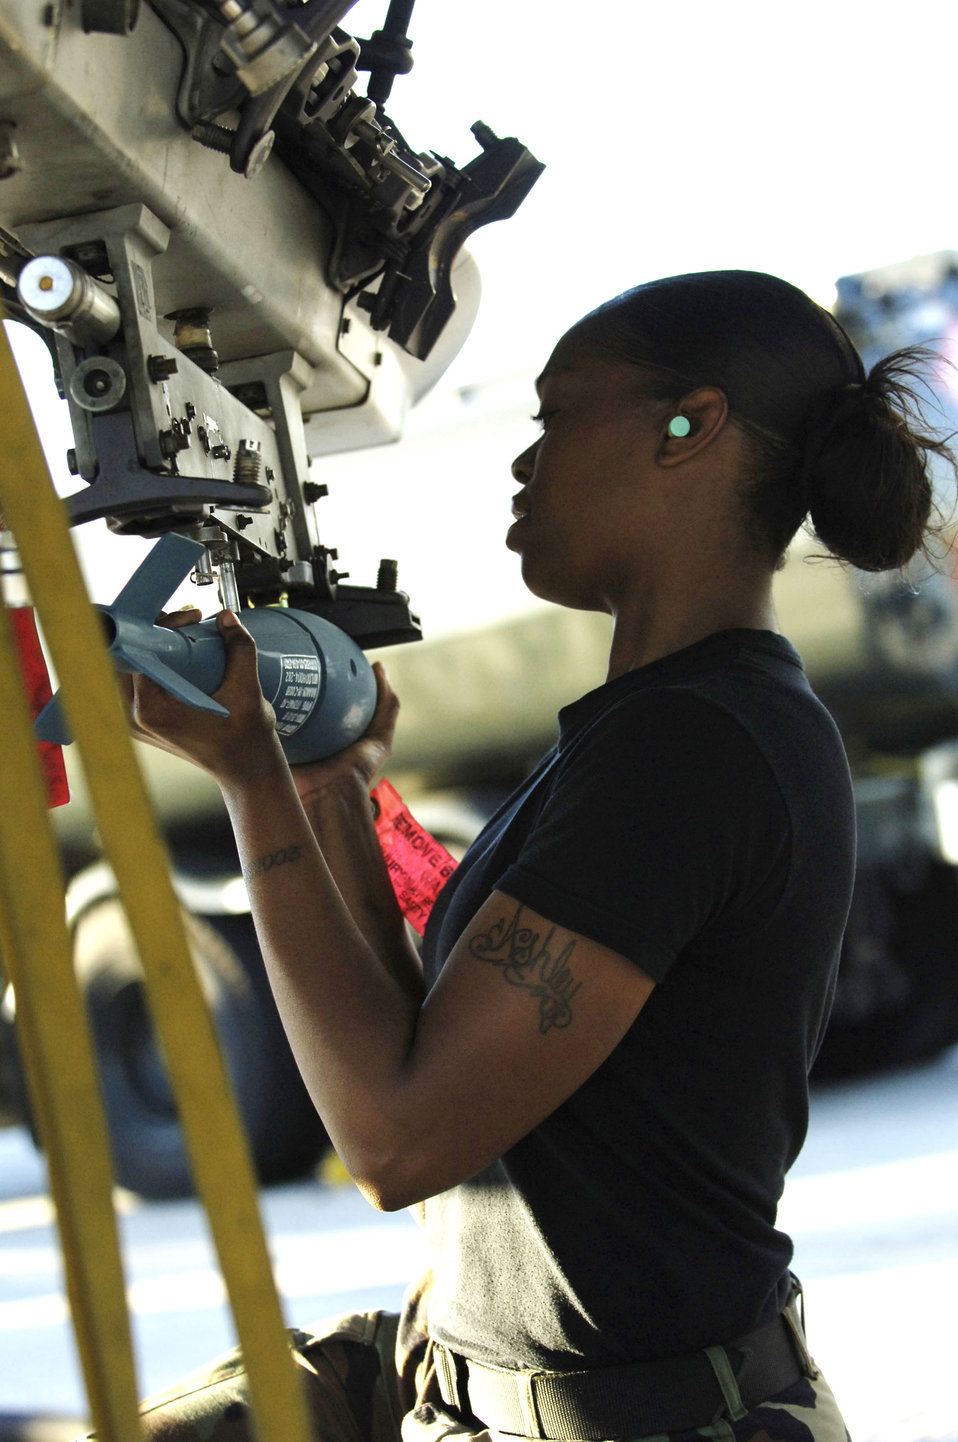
Close-air-support exercise tests Atlantic Strike participants

Senior Airman Ashley Hunter loads and secures a practice munition onto an A-10 Thunderbolt II Nov. 7 at MacDill Air Force Base, Fla. The bomblets are bound for the Avon Park Air Ground Training Complex as part of Exercise Atlantic Strike VI. The exercise is a U.S. Central Command Air Forces-sponsored exercise aimed at improving the coordination between joint terminal attack controllers and aircraft during urban close-air-support scenarios. Airman Hunter is a weapons load crew member from Spangdahlem Air Base, Germany.